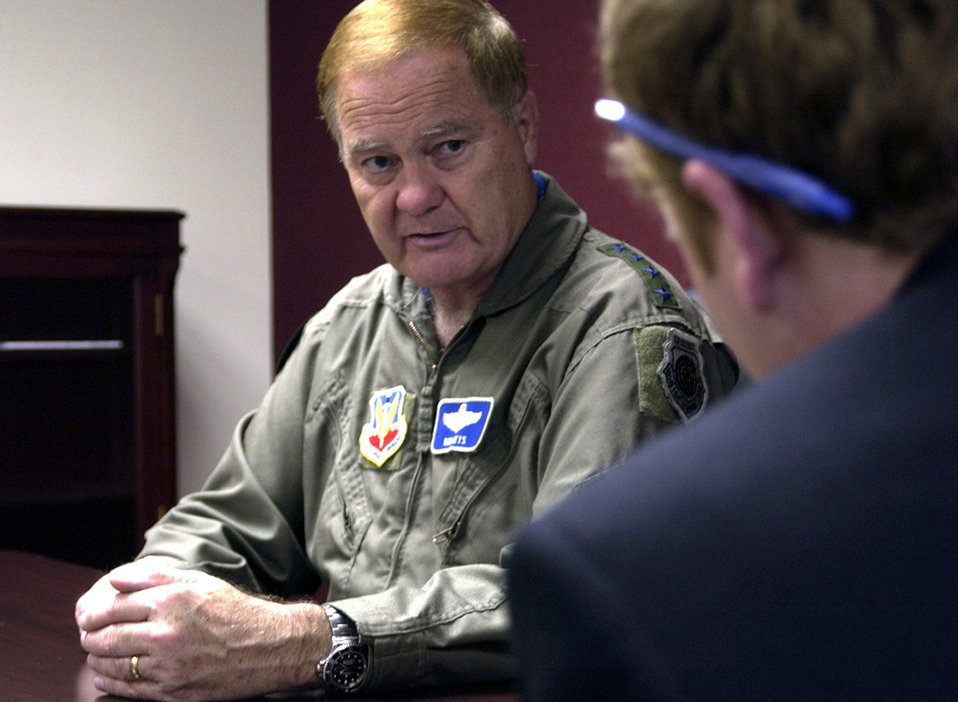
ACC commander to retire this fall

Gen. Ronald E. Keys outlines the strain put on equipment and Airmen by increased operations tempo during an interview May 14 at Offutt Air Force Base, Neb. General Keys is the Air Combat Command commander, in charge of the primary force provider of combat airpower to America's warfighting commands. He plans to retire this fall.